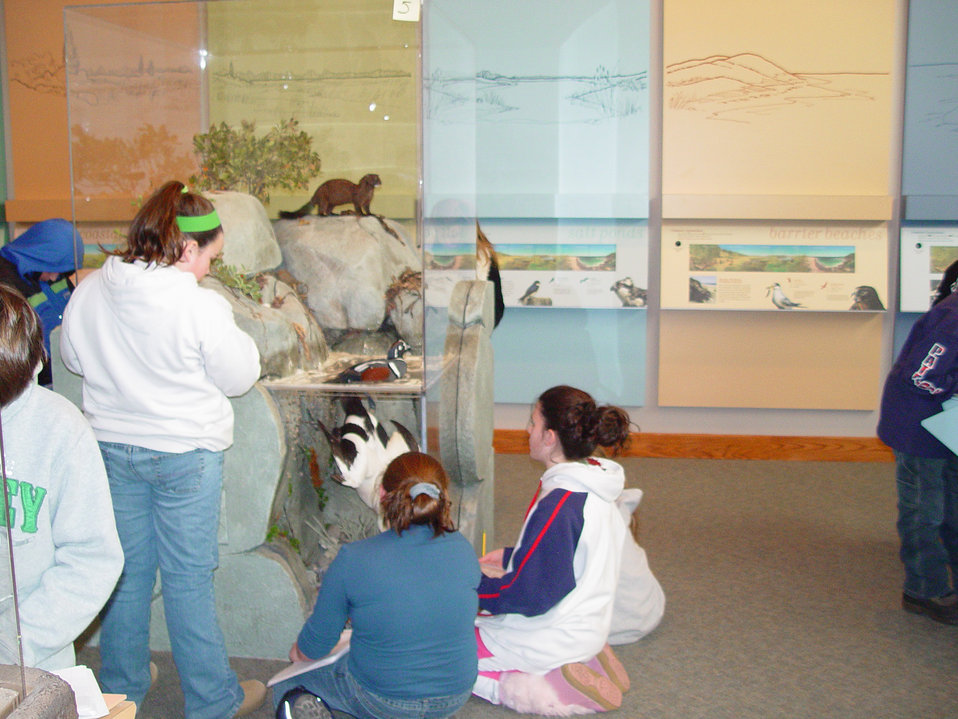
Kettle Pond Visitor Center

School group at the Kettle Pond Visitor Center in Charlestown, RI.